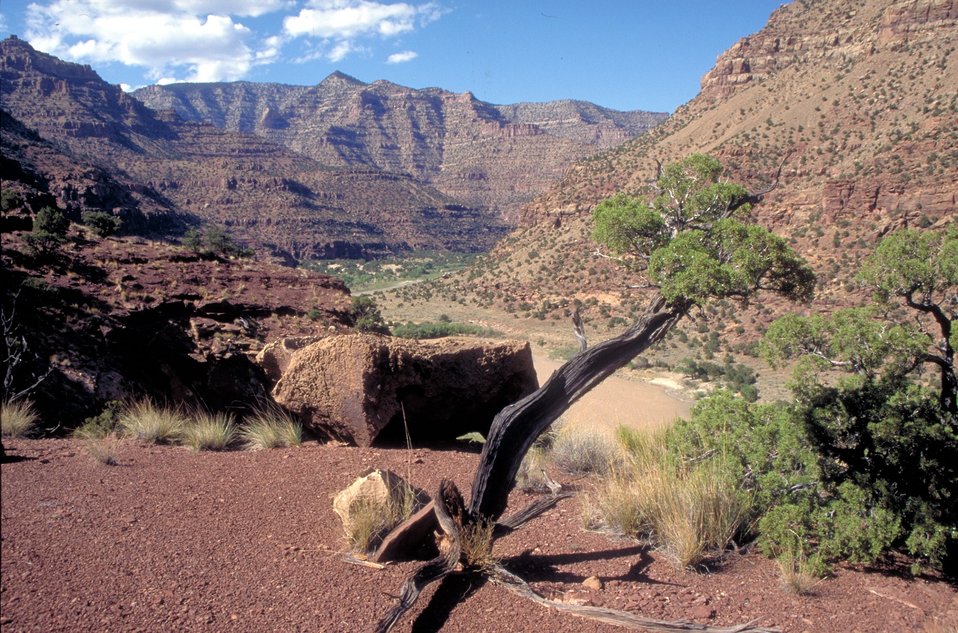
Desolation/Gray Canyons near Price, Utah.